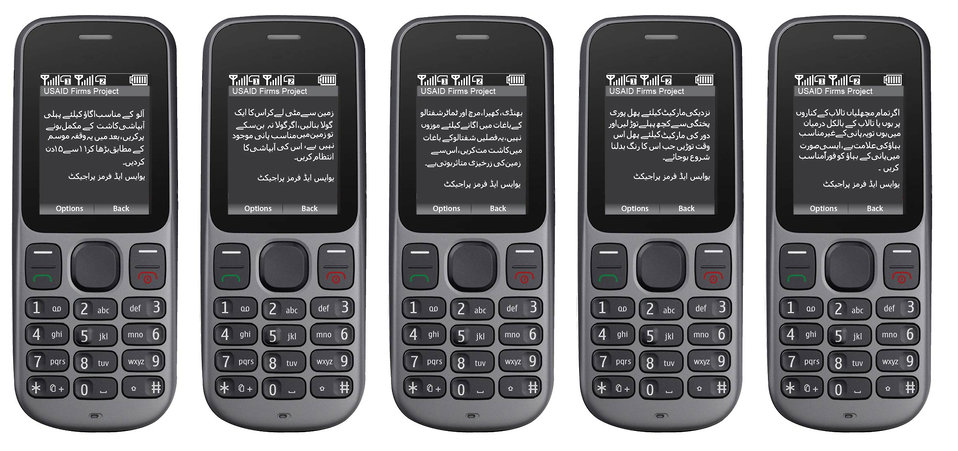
Mobile cutout